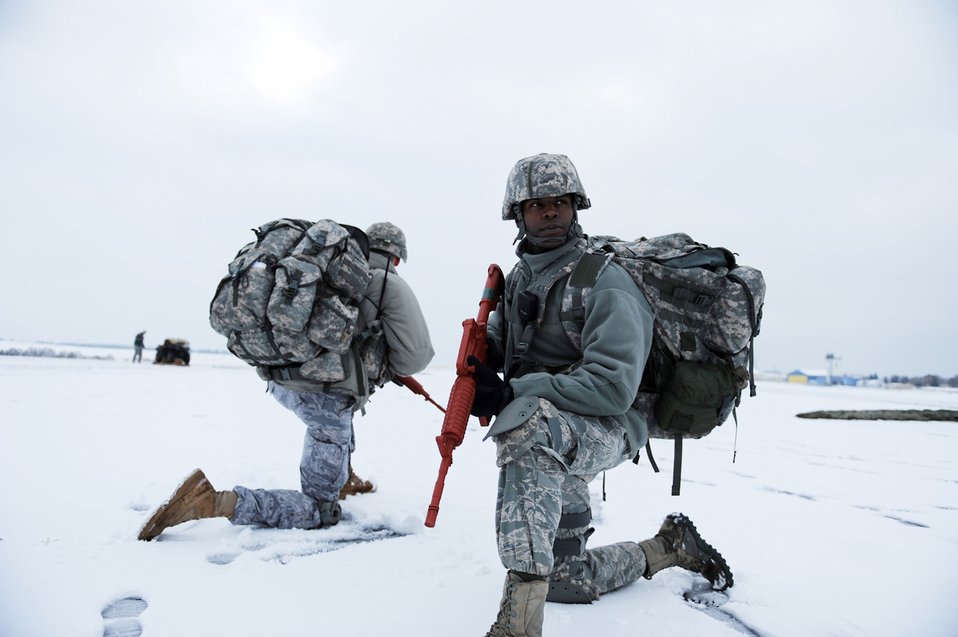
You look back there, I'll look over here

Capt. Mark Breed and Master Sgt. Tyrone Morgan secure a drop-zone during an insertion mission at Bitburg Airport, Germany, Jan. 25, 2010. Captain Breed is the operations officer and Sergeant Morgan is the operations superintendent for the 435th Air Ground Operations Wing at nearby Ramstein Air Base.